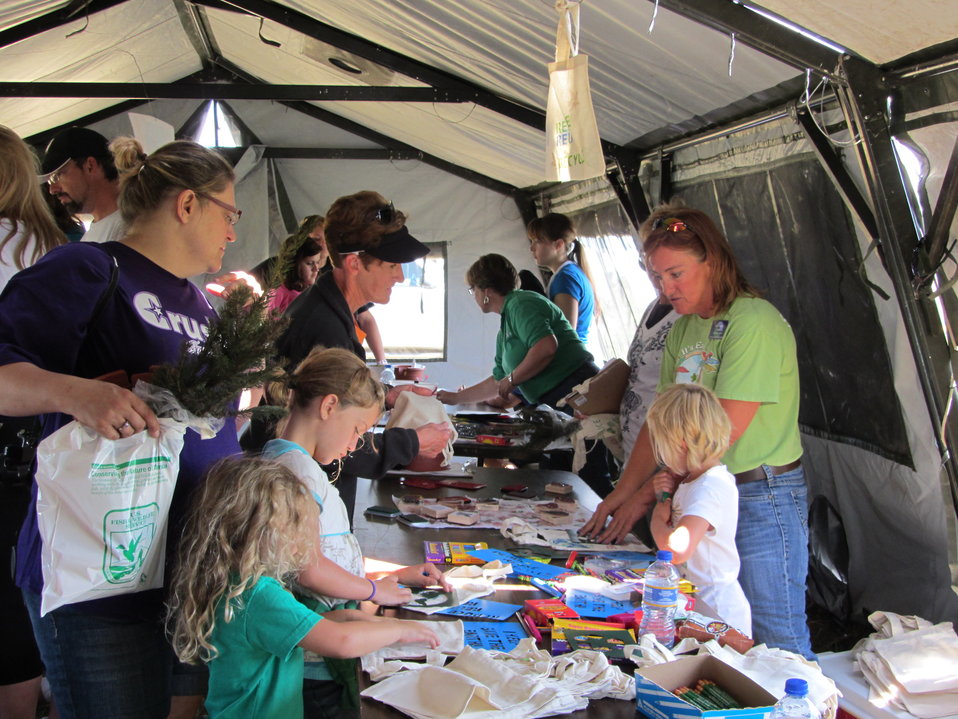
2011 Huron Prairie Fest

Kids even got to make their own bags courtesy of the Beadle County Conservation District.